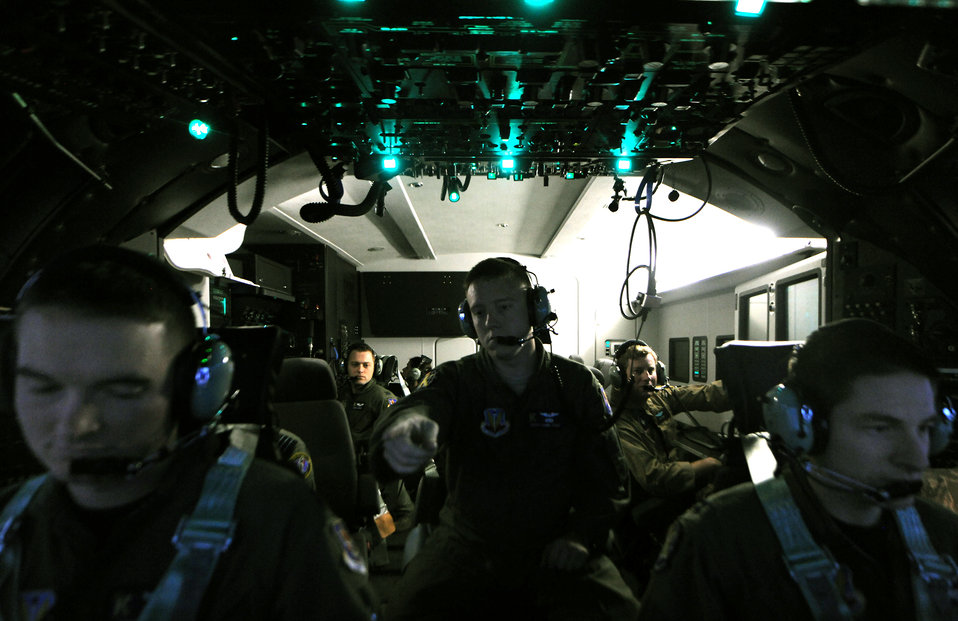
Flight simulator

A crew prepares to